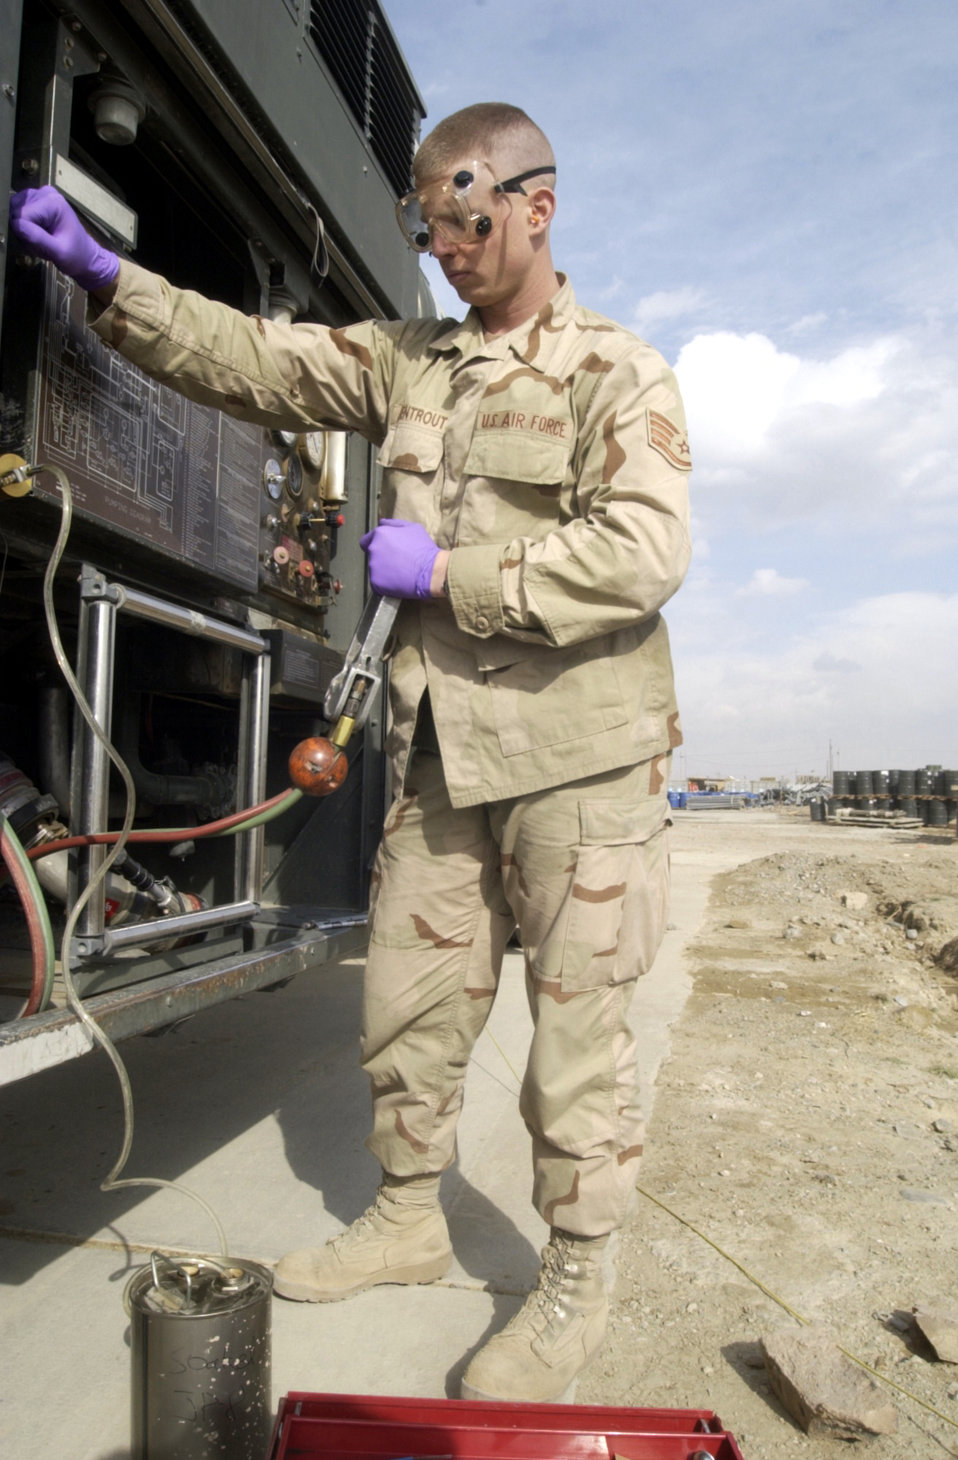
No fuel, no fight

BAGRAM AIR BASE, Afghanistan -- Staff Sgt. Robert Armentrout takes a fuel sample to check for water particles. Armentrout is a fuels specialist assigned to the 455th Expeditionary Operations Group.